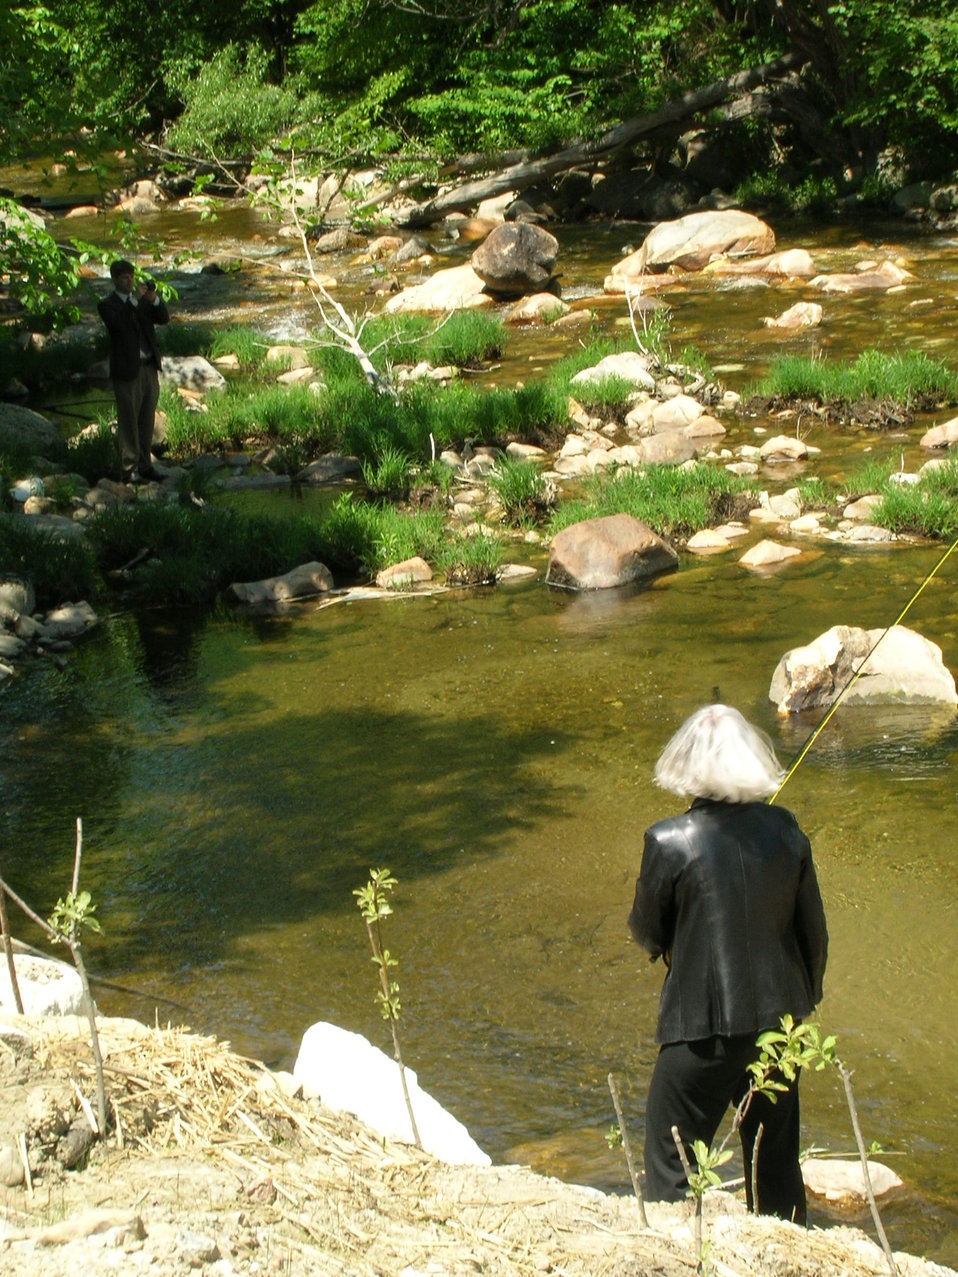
Briggsville Dam Removal Celebration